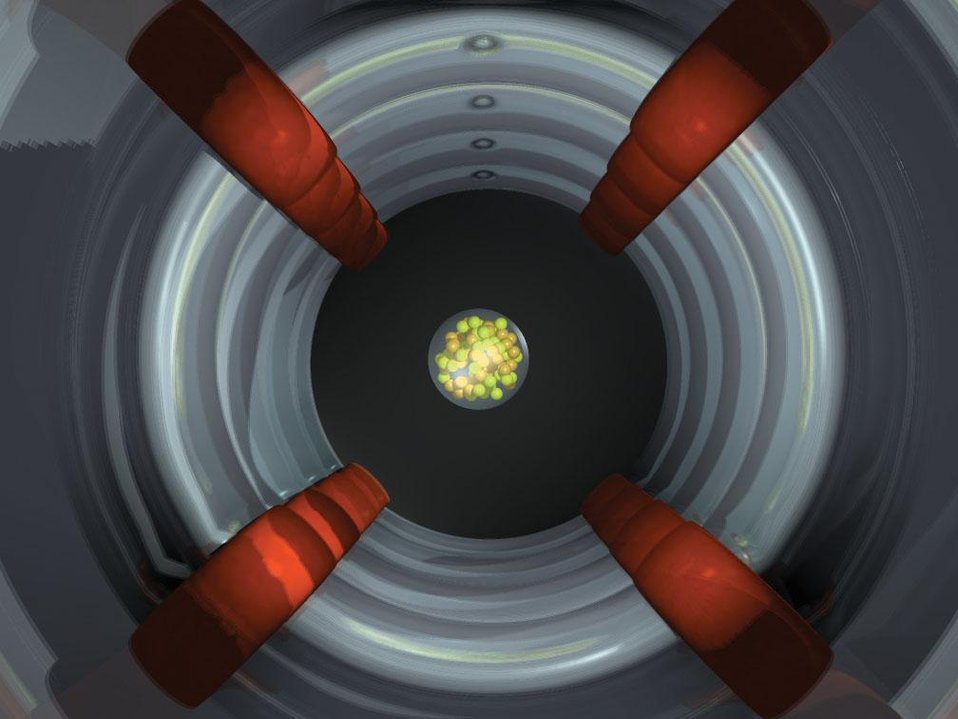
SIMULATION OF A CALCIUM-48 ION ACCELERATED TO A HIGH VELOCITY IN A CYCLOTRON AND DIRECTED AT AN AMERICIUM-243 TARGET.

SCIENTISTS AT DOE'S LAWRENCE LIVERMORE NATIONAL LABORATORY, IN COLLABORATION WITH RESEARCHERS FROM THE JOINT INSTITUTE OF NUCLEAR RESEARCH (JINR) IN RUSSIA, HAVE DISCOVERED THE TWO NEWEST SUPER-HEAVY ELEMENTS, ELEMENT 113 AND ELEMENT 115. IN THESE DECAY CHAINS, ELEMENT 113 IS PRODUCED VIA THE ALPHA DECAY OF ELEMENT 115. THE EXPERIMENTS PRODUCED FOUR ATOMS EACH OF THE TWO ELEMENTS THROUGH THE FUSION REACTION OF CALCIUM-48 NUCLEI IMPINGING ON AN AMERICIUM-243 TARGET.